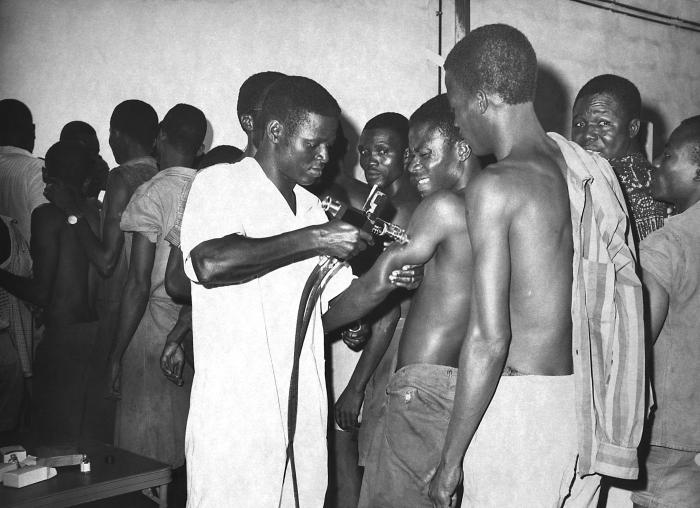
This 1968 photograph depicting a group of local inhabitants receiving smallpox inoculations, was taken in the city of Contonou, Benin, which was formerly the country of Dahomey, during the worldwide Global Smallpox Eradication Campaign of the late 1960's, early 1970s.